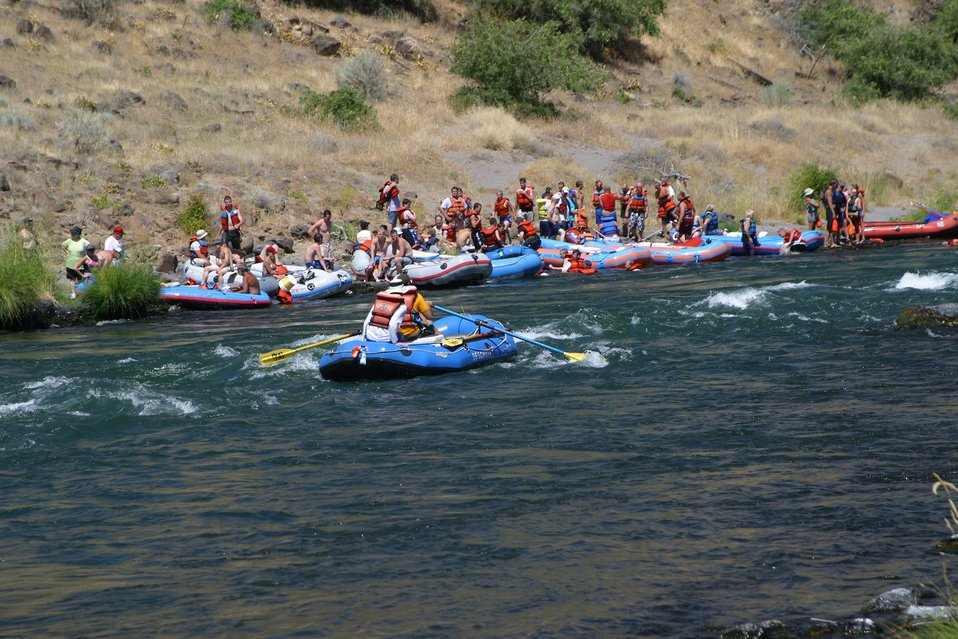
Elevator Rapids near Mile 46 on the Lower Deshcutes River. 7/26/03 Pelton Dam 3600 cfs: Moody Rapids 4300 cfs.